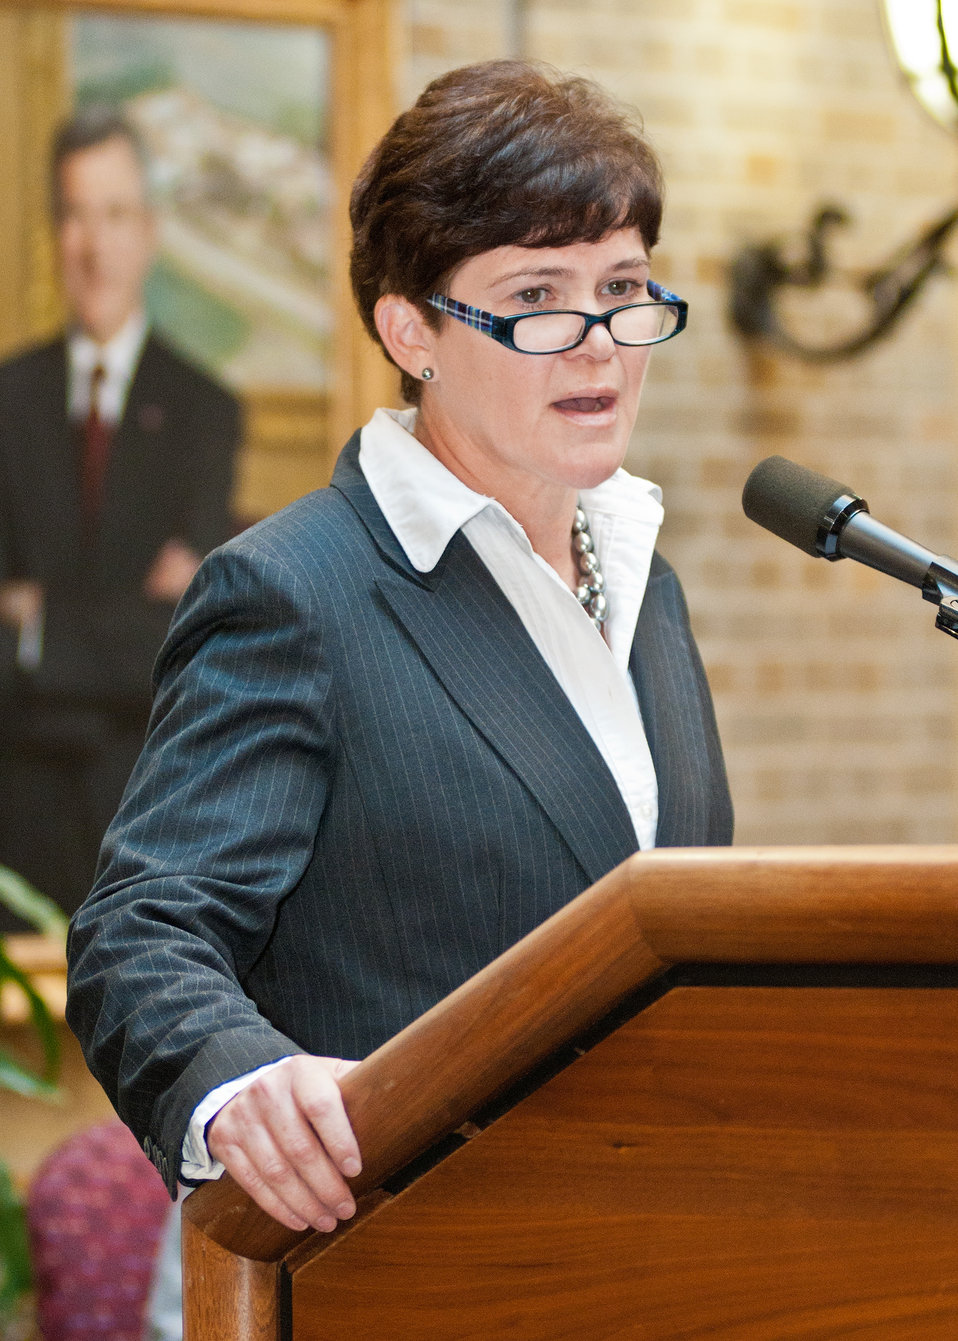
Krysta Harden, Chief of Staff announced the upcoming year long celebration of the United States Department of Agriculture’s 150th anniversary in Washington, DC Wednesday, November 2, 2011. President Abraham Lincoln established the United States Department of Agriculture in 1862. USDA stills fulfills the vision he set forth when he called us the “People’s Department” touching the lives of every American everyday. Throughout the coming year USDA will commemorate important events, such as, the signing of the Department of Agriculture Organic Act on May, 15, 1862 by President Lincoln, which established the Department, and the June signing of the Morrill Act to establish our public land grant universities.